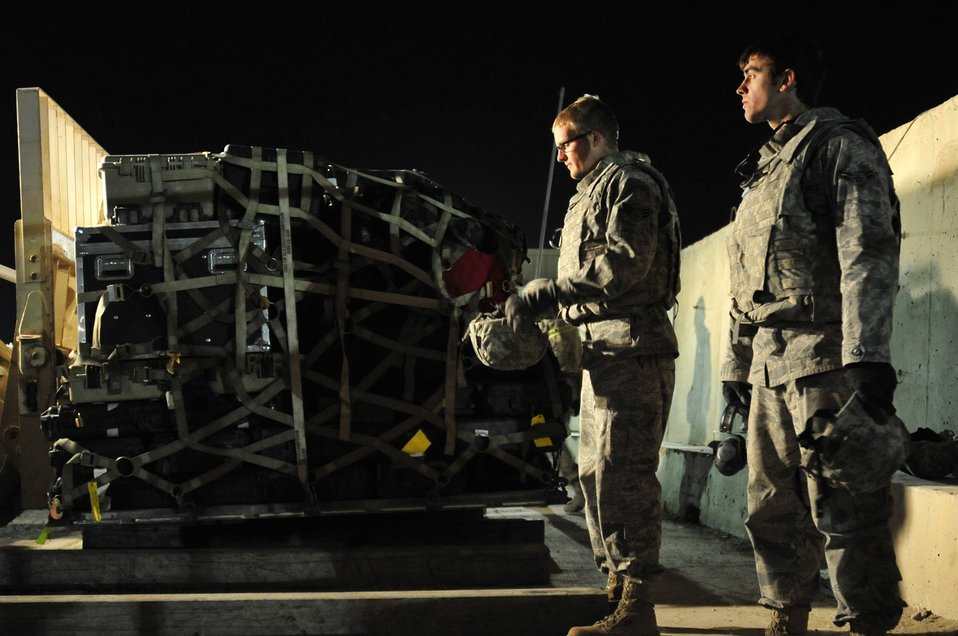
Last Airmen flying out of Iraq

Senior Airman Nicholas Olsen and Airman 1st Class Justin Smith prepare the last pallet to be transported from Ali Air Base, Iraq, Dec. 18, 2011. The Airmen are the last service members to redeploy from Iraq based on the Iraq and U.S. 2008 Security Agreement that required all U.S. service members to be out of the country by Dec. 31. Olsen and Smith are aerial porters assigned to the 407th Air Expeditionary Group.